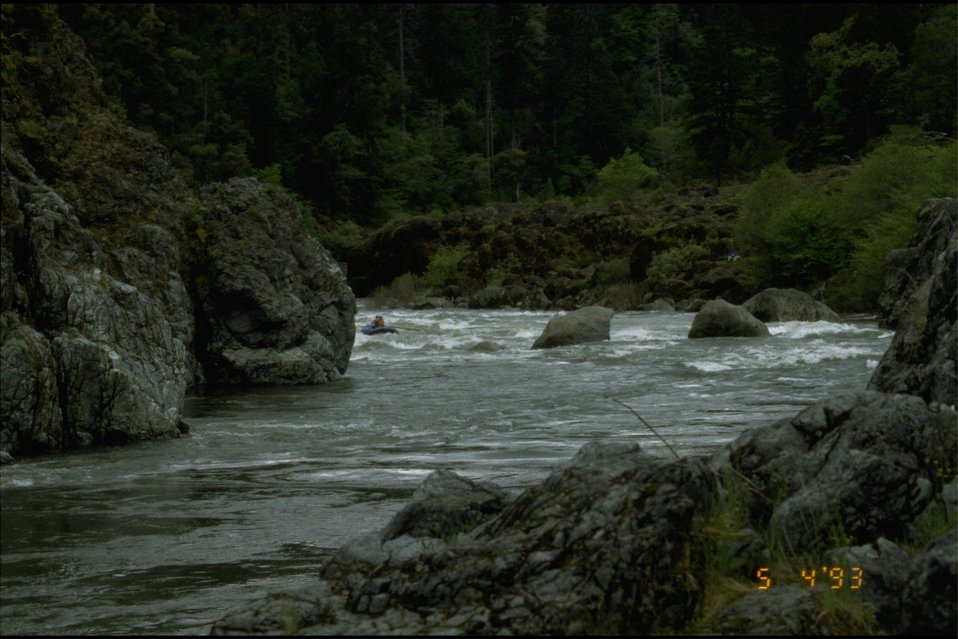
Blossom Bar at 6000 cfs